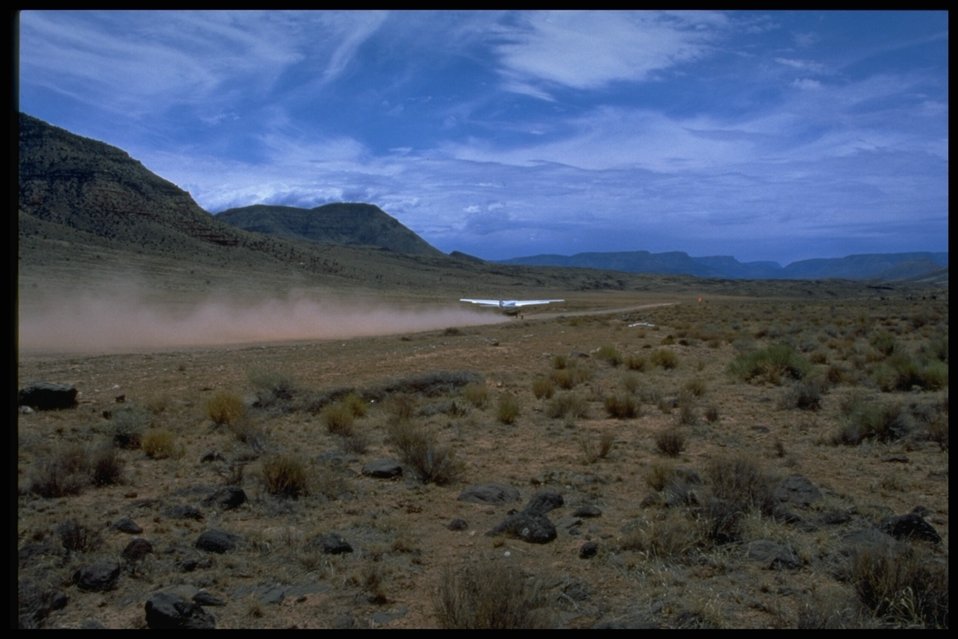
A small plane lands on a runway in the Parashant National Monument area.